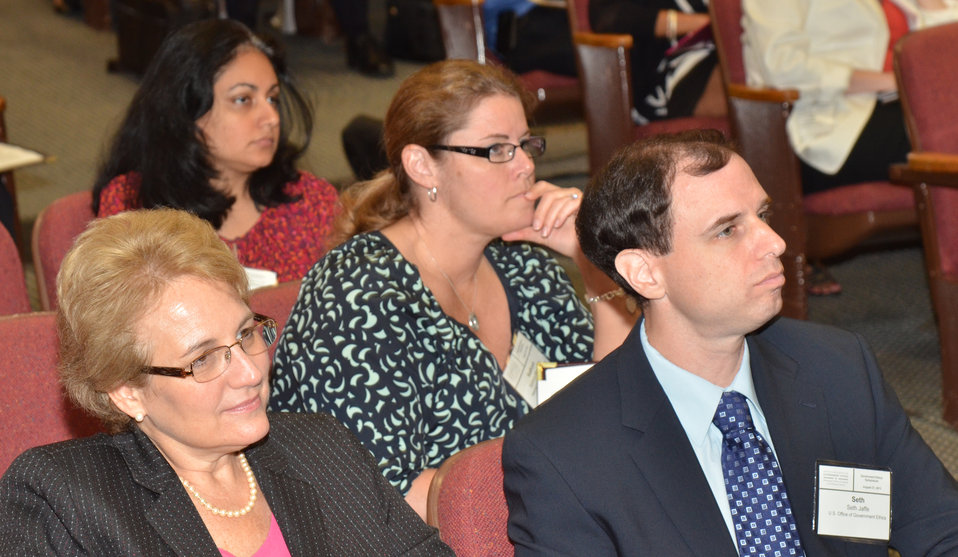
The audience listens to speakers at the U.S. Office of Government Ethics training Preventing Conflict of Interest in the Executive Branch at the Jefferson Auditorium at the U.S. Department of Agriculture in Washington, D.C. on Wednesday, Aug. 21, 2013.